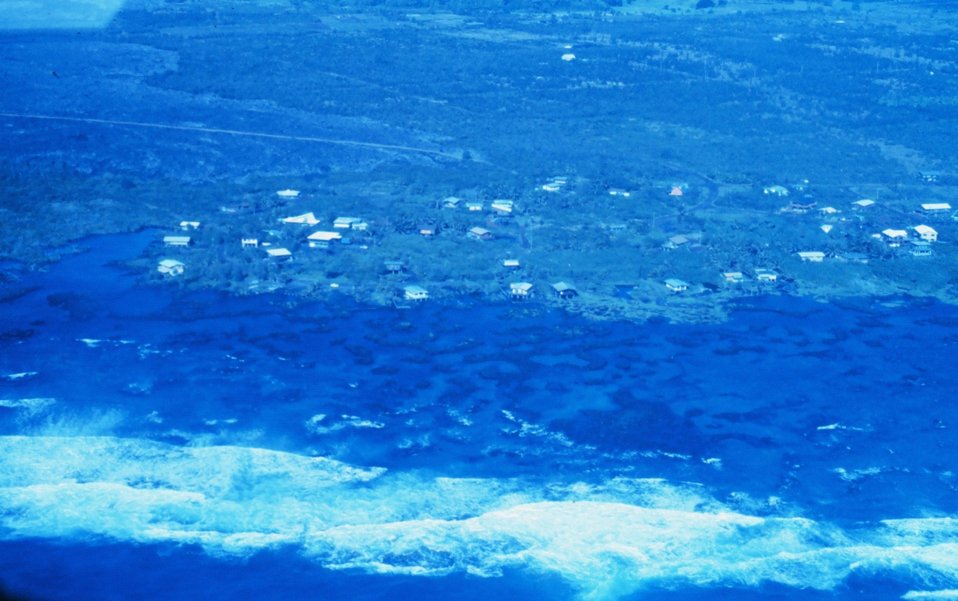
The Kona Coast from the air